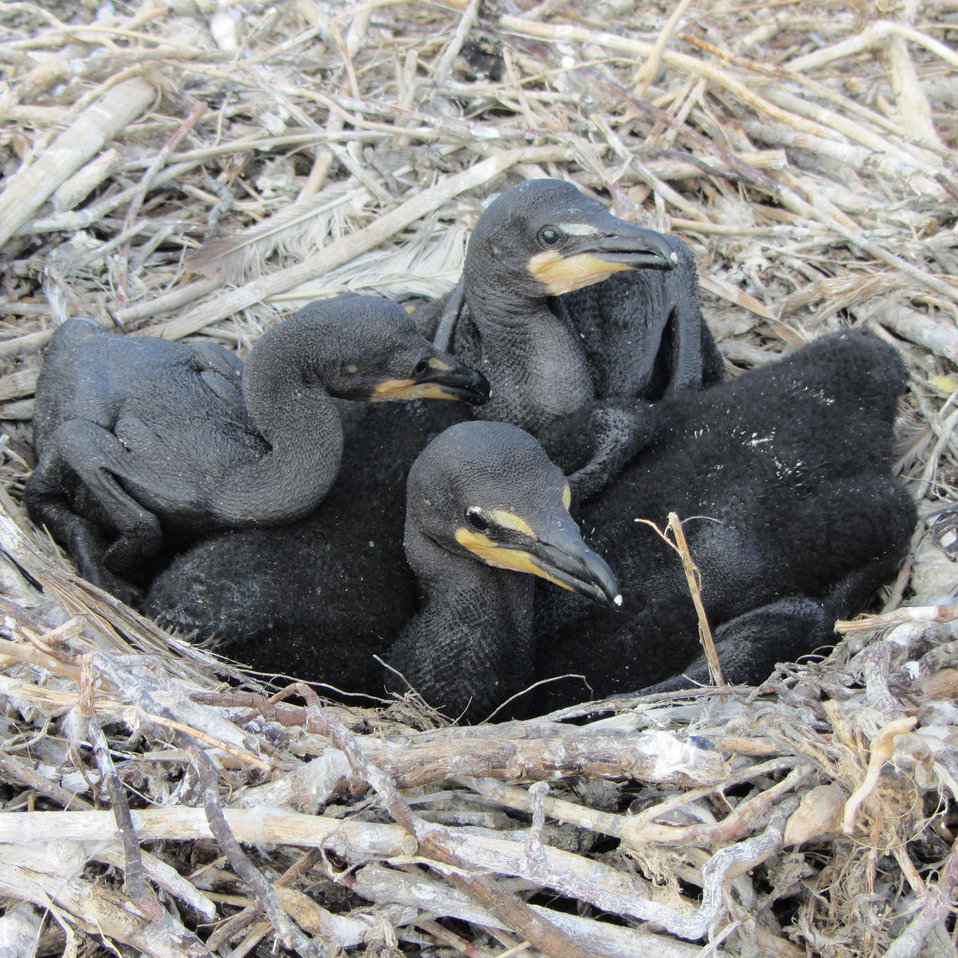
Double-crested Cormorants

Jackie Jacobson/USFWS